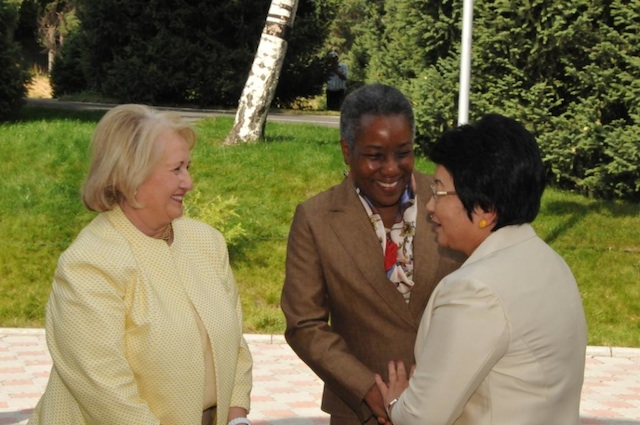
Ambassadors Spratlen and Verveer Speak With Kyrgyz Republic President Otunbayeva

U.S. Ambassador to the Kyrgyz Republic Pamela Spratlen, center; and U.S. Ambassador-at-Large for Global Women’s Issues Melanne Verveer, left; speak with Kyrgyz Republic President Roza Otunbayeva, right; before the opening of the Central Asia and Afghanistan Women’s Economic Symposium in Bishkek, Kyrgyzstan, on July 18, 2011.